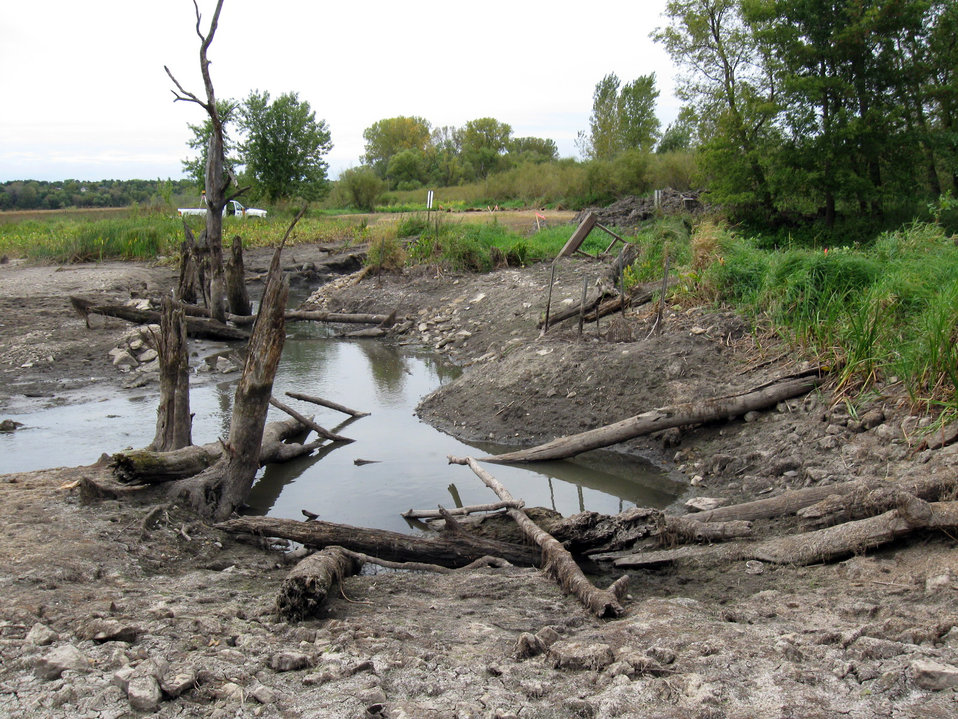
Area Affected by Flooding Prior to Restoration

Previously, the dike at Jailhouse Marsh was often damaged by river flooding.